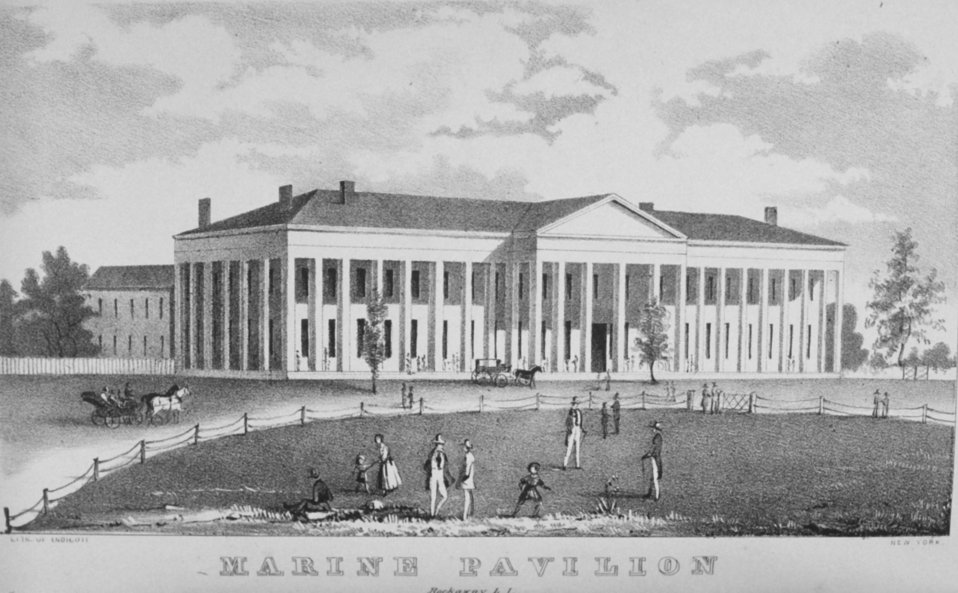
The Marine Pavilion at Rockaway, Long Island.